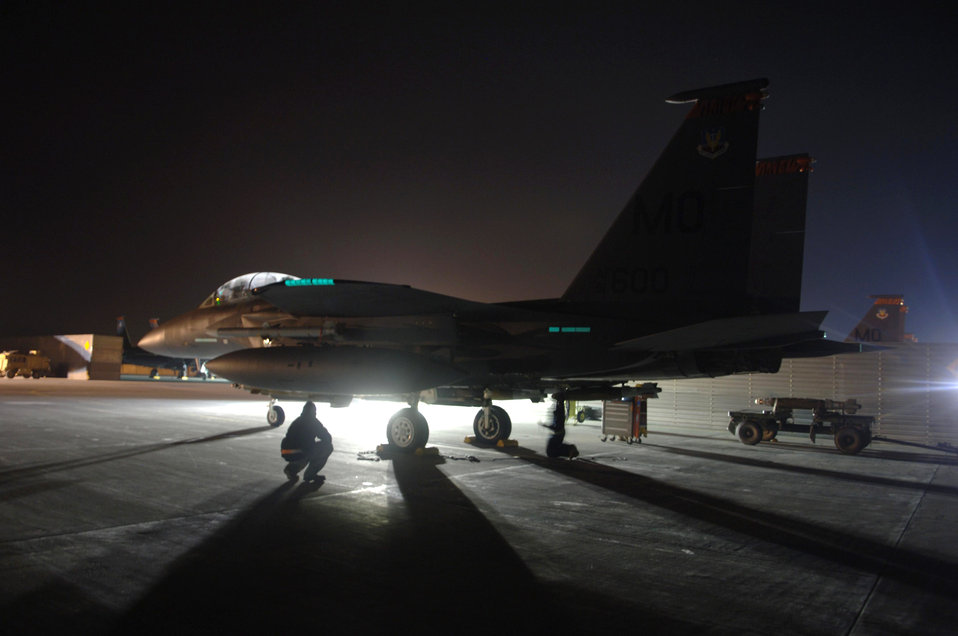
March 17airpower summary

Crew chiefs make final checks on an F-15E Strike Eagle before departing for a night mission at Bagram Air Base, Afghanistan. Strike Eagles prove close-air support to coalition ground forces.